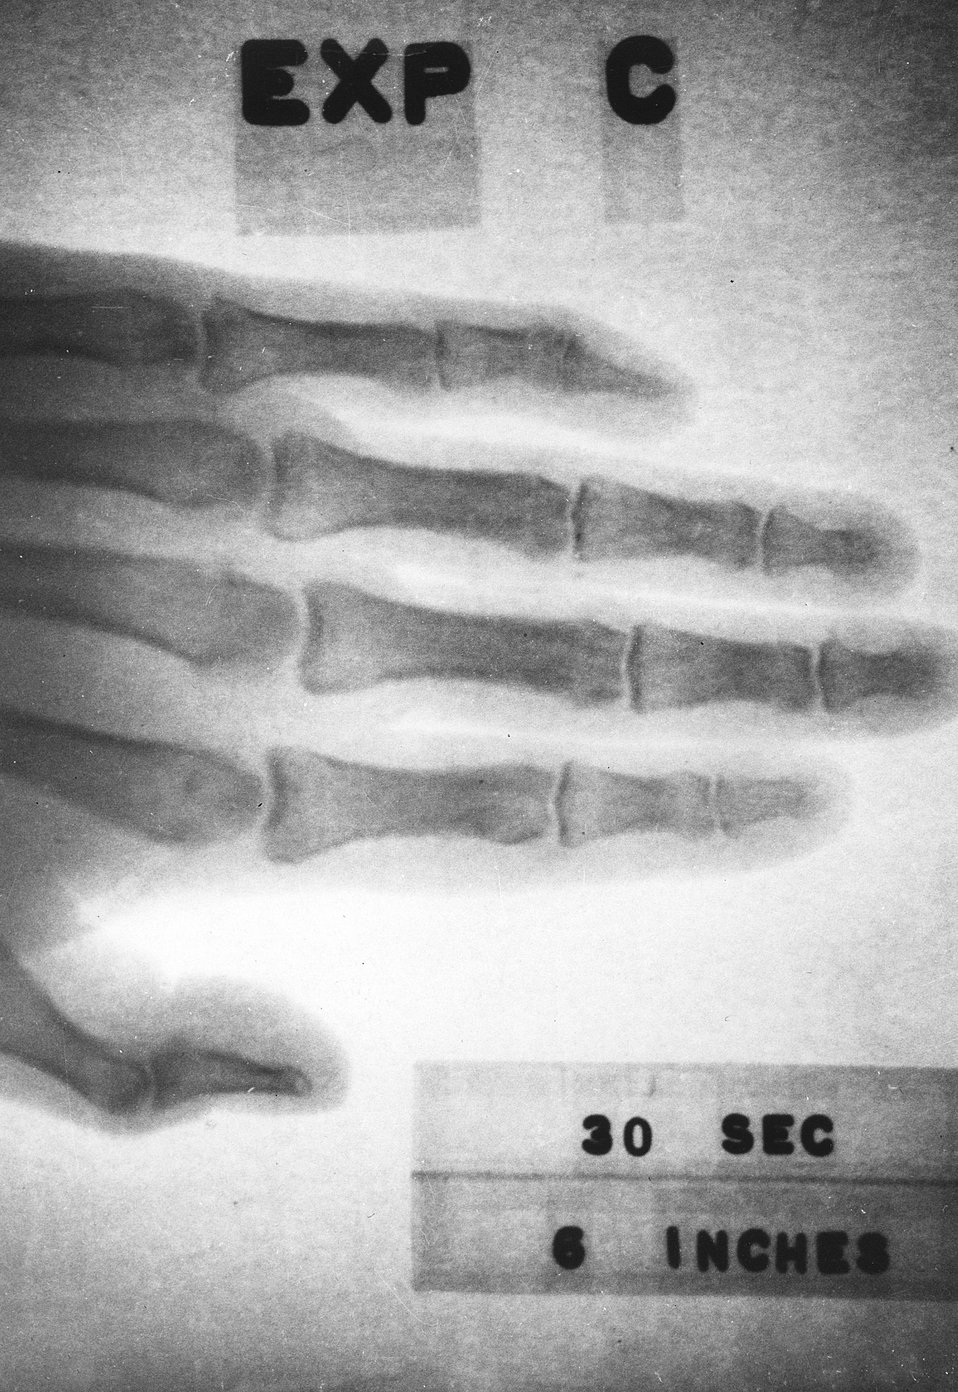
A small X-ray system powered by promethium 147 and about the size of a cigarette package has been developed by Armour Research Foundation under an AEC contract. Circa 1963.